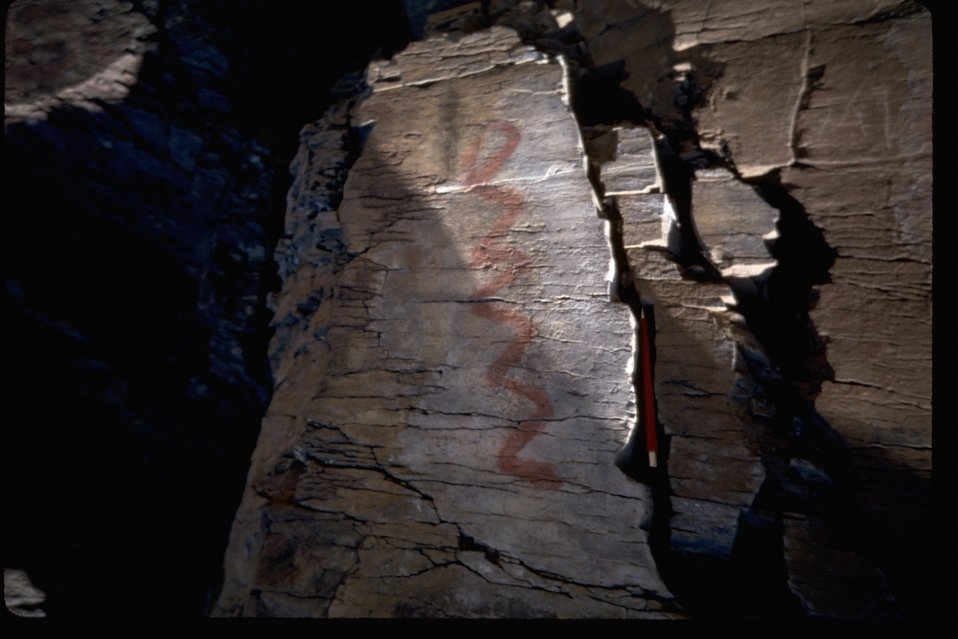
Pictograph/Rock Art.